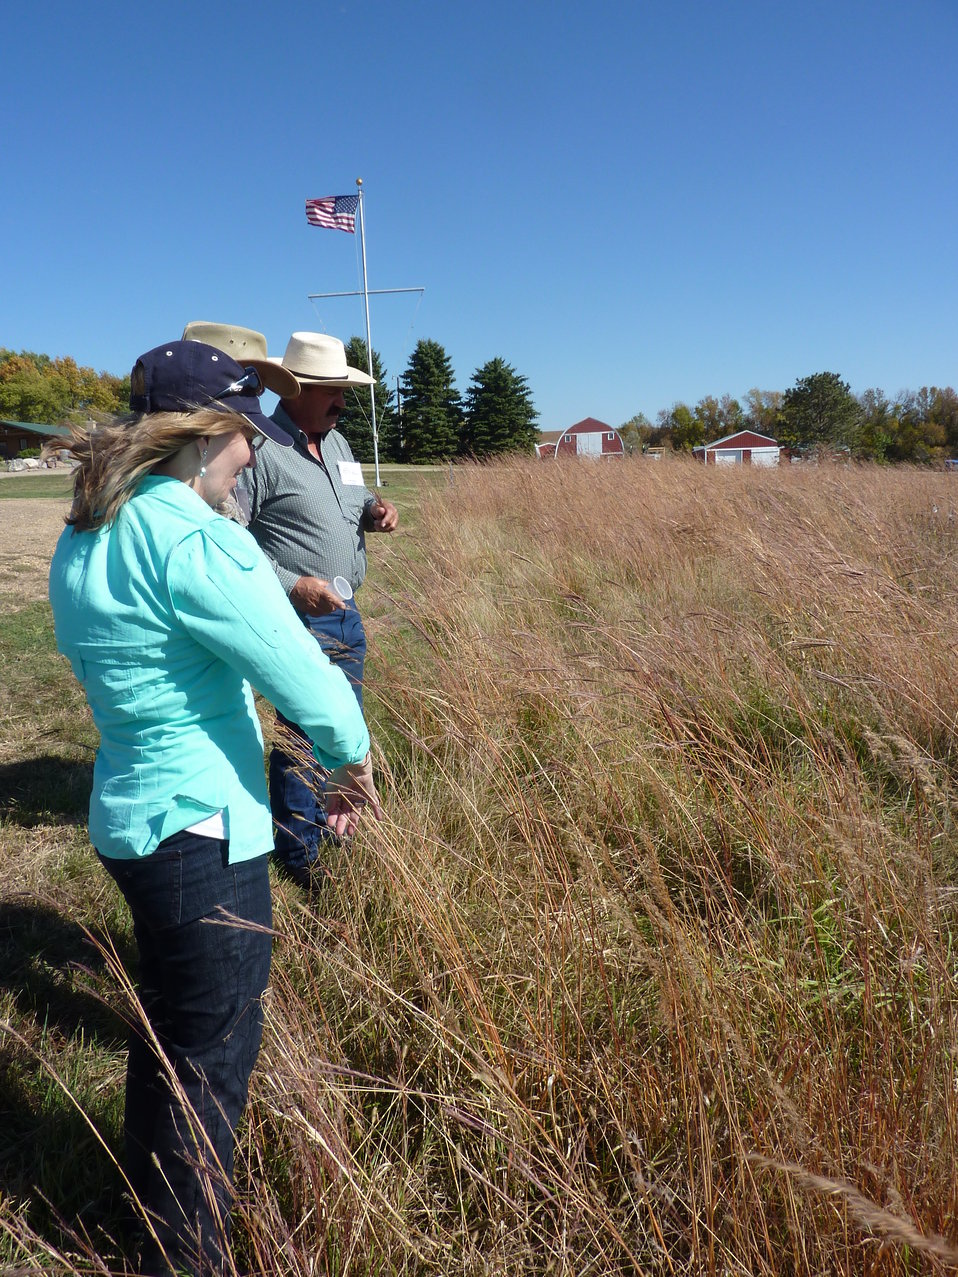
Private Lands Day 2011

South Dakota